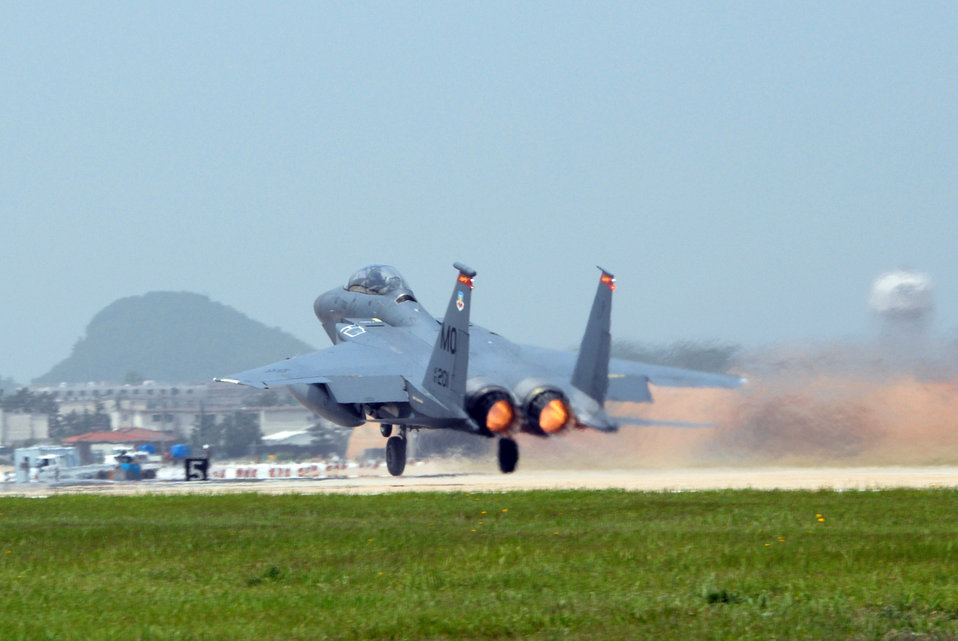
Max Thunder exercise

An F-15E Strike Eagle from Mountain Home Air Force Base, Idaho, takes off during Exercise Max Thunder June 19 at Kunsan Air Base, South Korea. Training side-by-side is part of day-to-day operations for Korean and U.S. Air Force memebers at Kunsan AB. The bi-lateral training received during Exercise Max Thunder will improve interoperability.